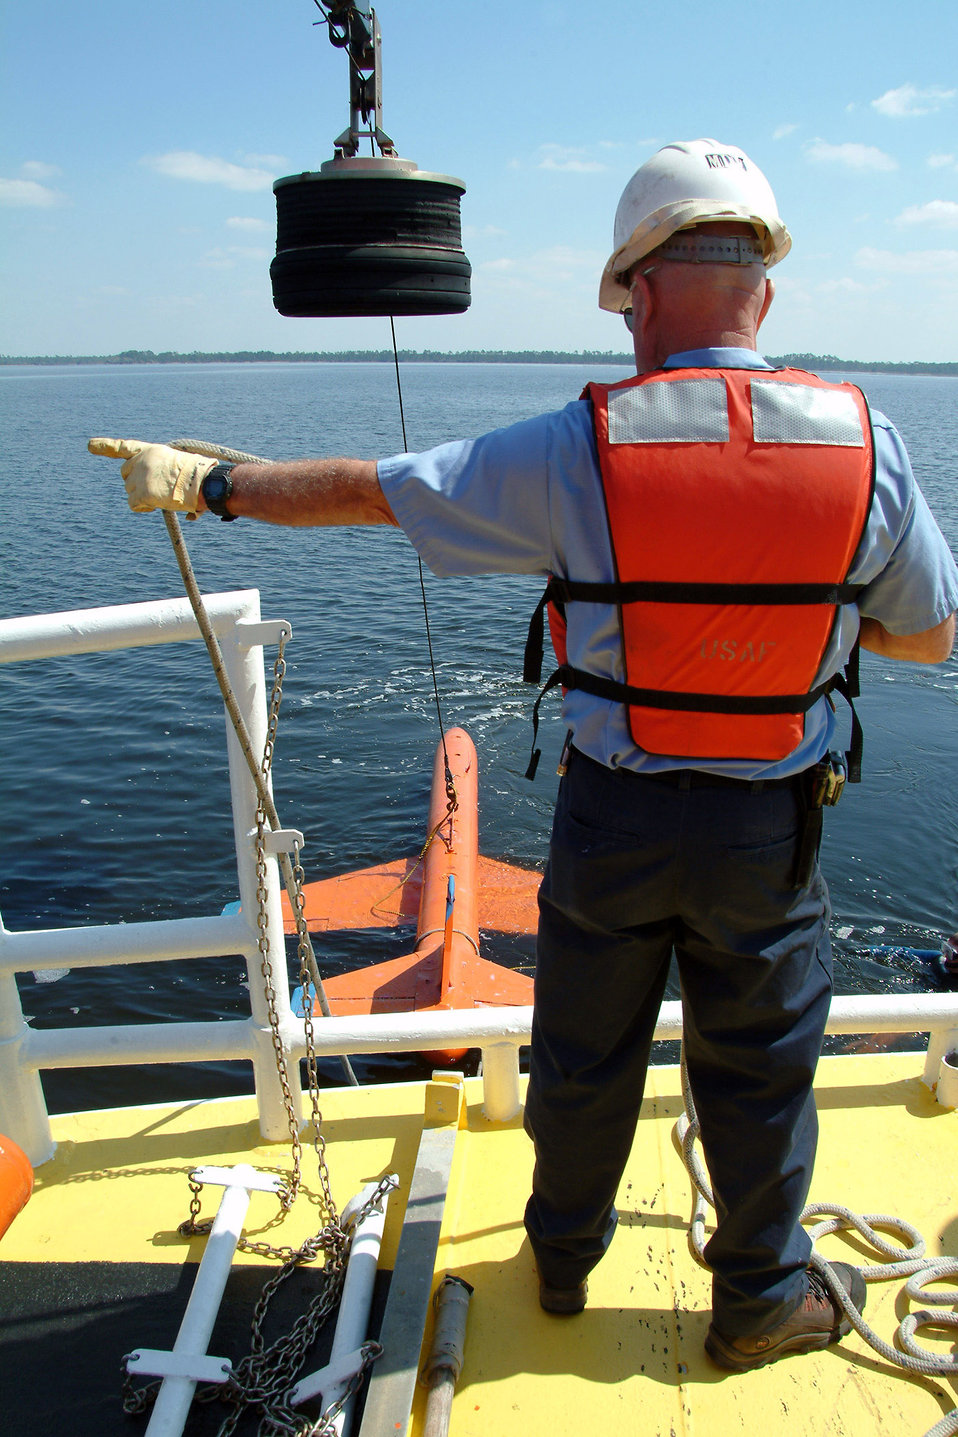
Air Force's navy

Byron Howle directs the crane movements to pick up the model BQM-107 sub-scale drone during a recovery demonstration March 26 in the waters off of Tyndall Air Force Base, Fla. The ship, one of three 120-foot boats owned by the Air Force, is contracted through the 82nd Aerial Targets Squadron to help recover sub-scale drones after they are shot down during live fire exercises.